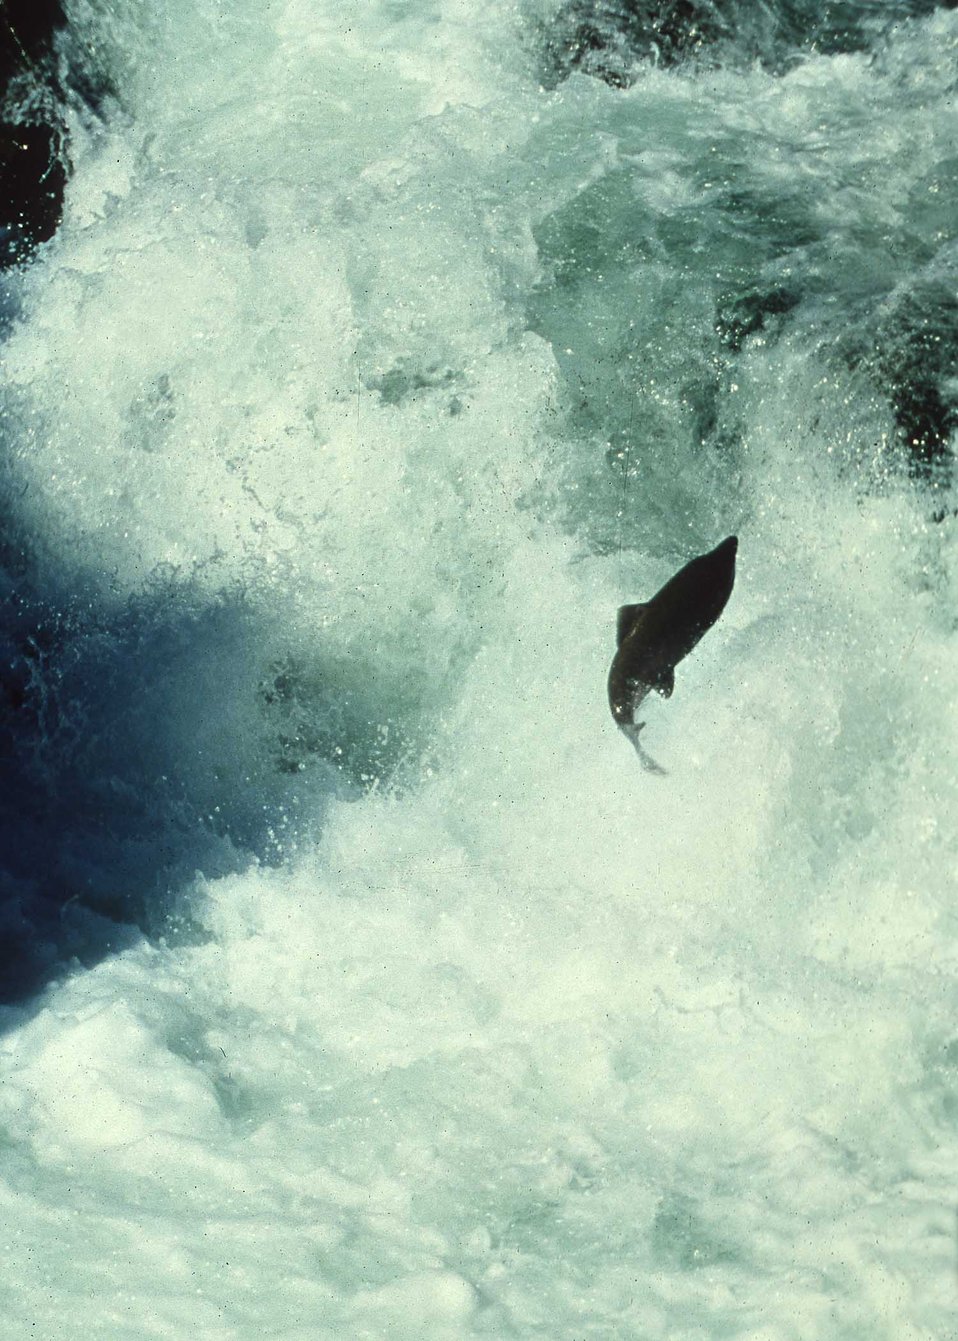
Salmon jumping up a waterfall below the old Selzer Dam. Removal of the dam added 10 miles of spawning habitat to the 15 mile stretch of Clear Creek.